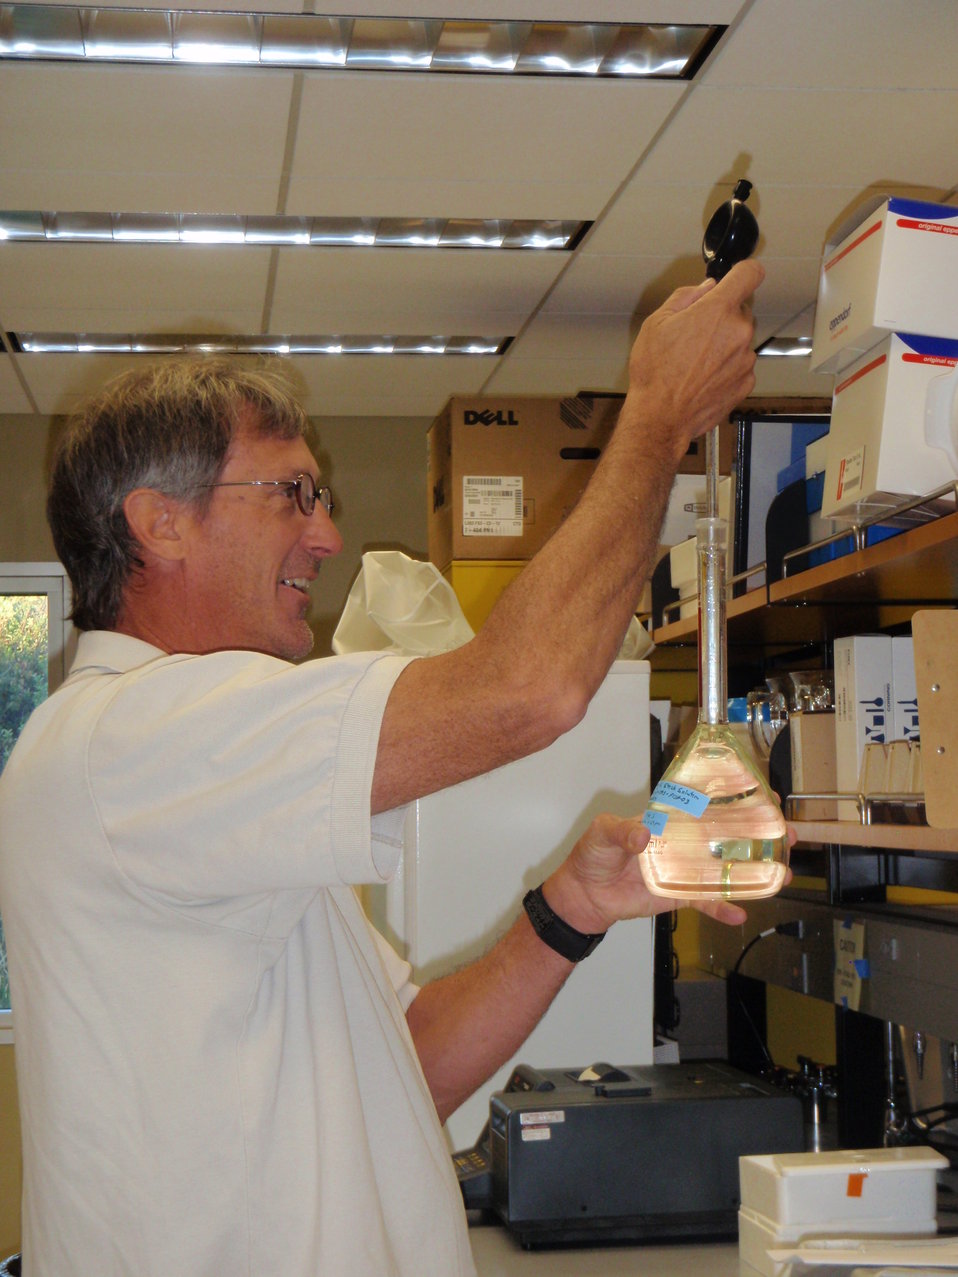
Jim Bowker measuring precise amounts for eugenol dose-verification during an AQUI-S 20E study.

Rachel Carson Award for Scientific Excellence (Group) – 2013